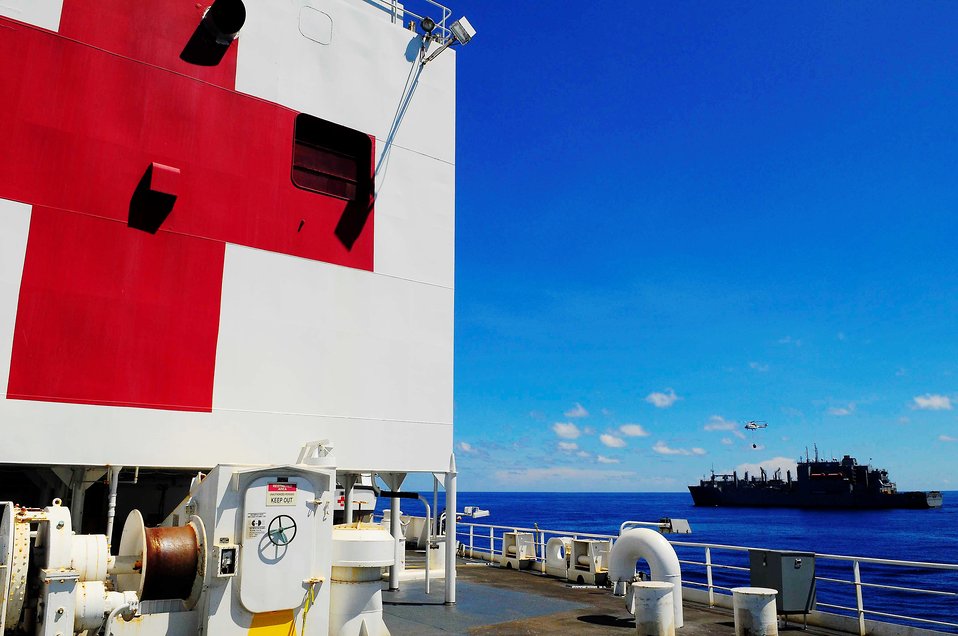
A Puma Helicopter Transports Cargo from USNS Richard E. Byrd to USNS Mercy

A Military Sealift Command-contracted SA-330J Puma helicopter transports cargo from the Military Sealift Command resupply ship USNS Richard E. Byrd (T-AKE 4) to the Military Sealift Command hospital ship USNS Mercy (T-AH 19) during a vertical replenishment at sea in the Pacific Ocean on June 29, 2010. Mercy is conducting Pacific Partnership 2010, the fifth in a series of annual U.S. Pacific Fleet humanitarian and civic assistance endeavors to strengthen regional partnerships.